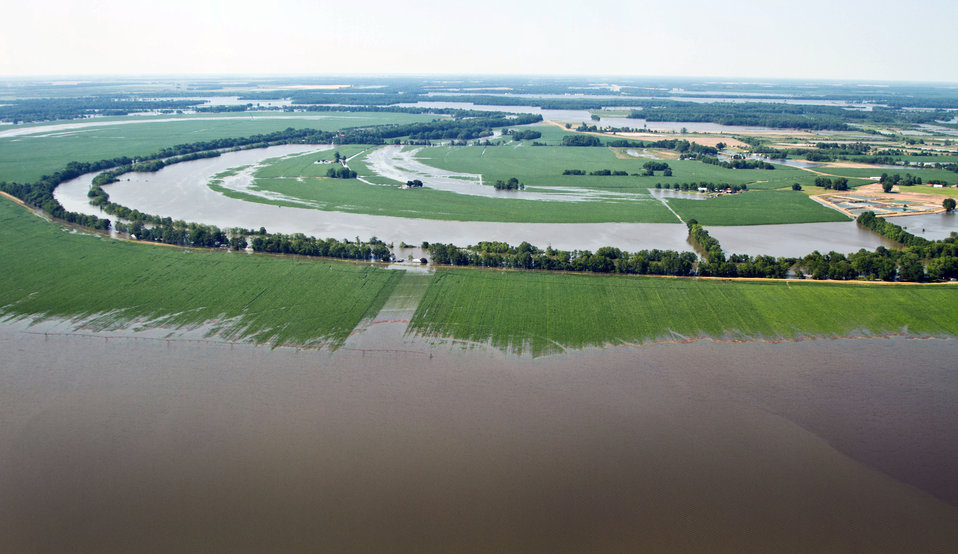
Aerial view of Mississippi River flood levels and inundation of farm, wilderness, and populated areas, on Thursday, May 19, 2011. from the MS side. Onboard passengers included Representative Bennie Thompson (blue shirt), and U.S. Department of Agriculture’s Undersecretary for Rural Development Dallas Tonsager (white shirt); Acting Under Secretary Farm and Foreign Agriculture Service Michael Scuse (black coat); Rural Development State Director Trina N. George (tan blouse) and County Executive Director Aaron C. Robinson Sr. (plaid shirt). Aerial platform was a UH-60 Blackhawk commanded by Col. Kennedy and his flight crew from the Army Aviation Support Facility #1 at Hawkins Field in Jackson.